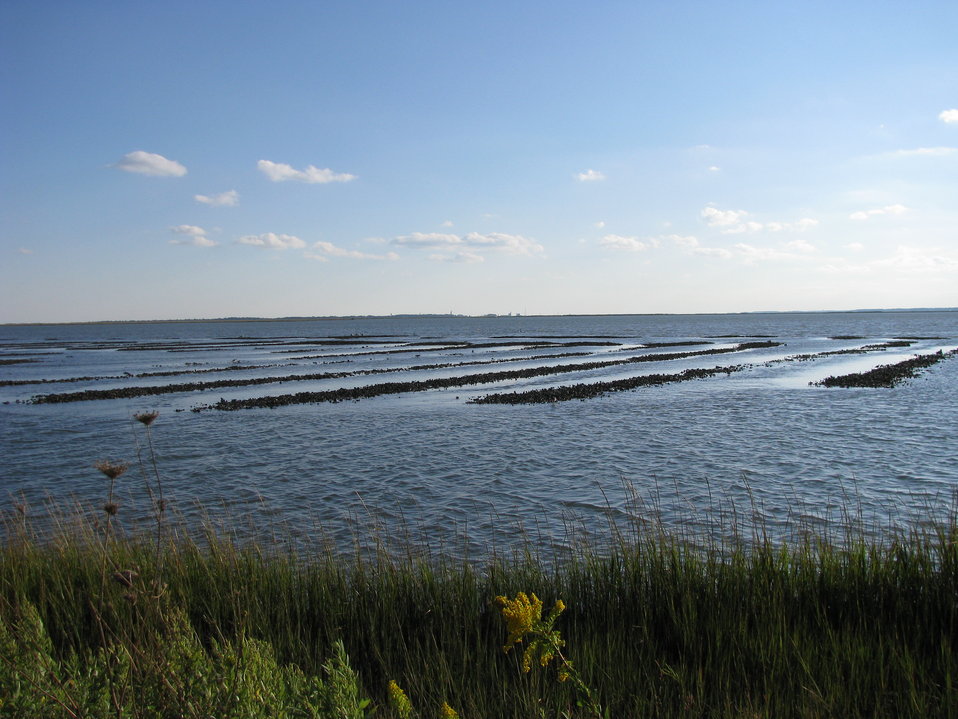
Chincoteague National Wildlife Refuge